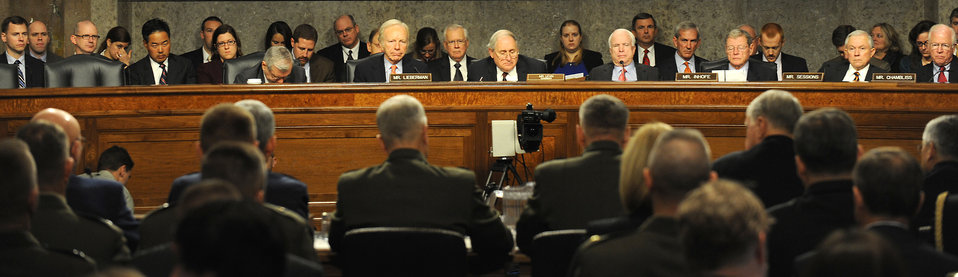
HASC Hearing on Don't Ask, Don't Tell

Air Force Chief of Staff Gen. Norton Schwartz and other senior military leaders testify before the Senate Armed Services Committee Dec. 3, 2010, in Washington, D.C. General Schwartz, his fellow service chiefs and the vice chairman of the Joint Chiefs of Staff testified on the recently released Comprehensive Review Working Group report, which addresses the potential repeal of the